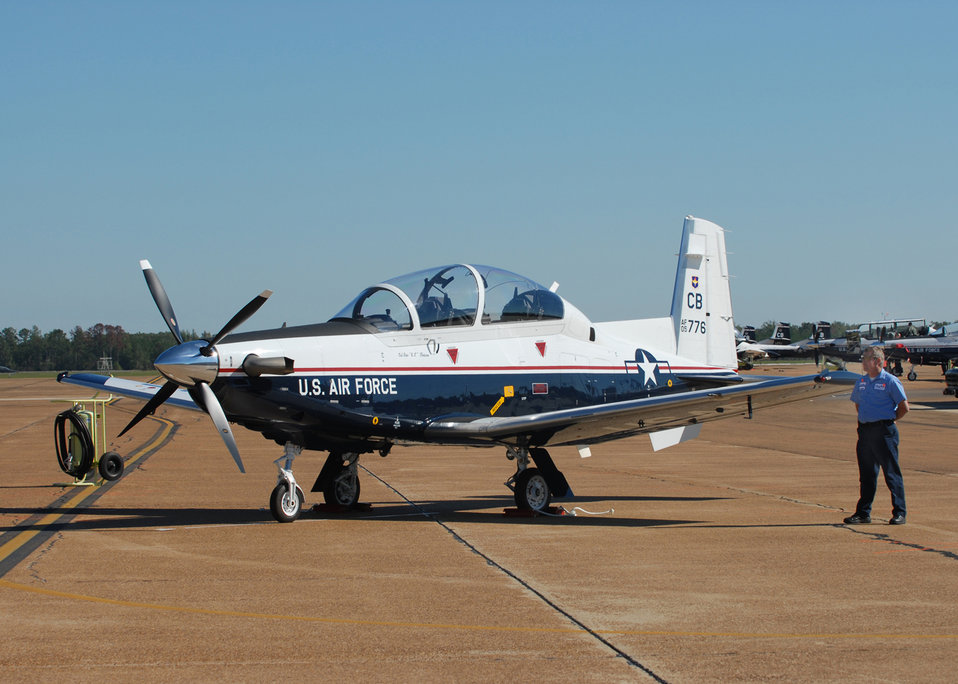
T-6 Texan II

The T-6A Texan II is a single-engine, two-seat primary trainer designed to train Joint Primary Pilot Training, or JPPT, students in basic flying skills common to U.S. Air Force and Navy pilots.